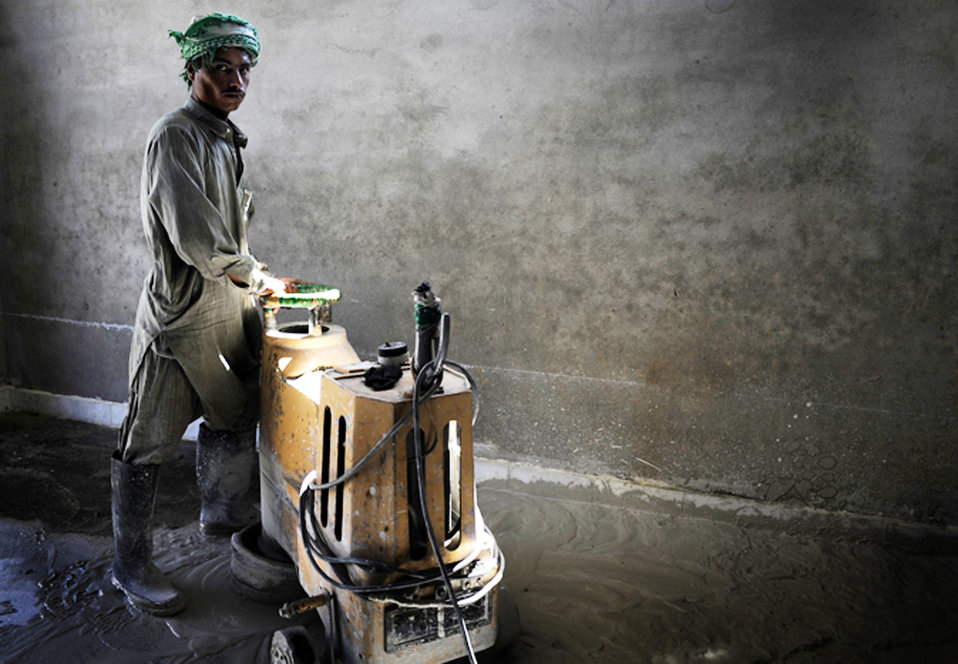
Afghanistan's future foundation

A local contractor spreads concrete for a development site May 30, Nangarhar Province Afghanistan. The development is monitored by the Provincial Reconstruction Team, Forward Operating Base Finley-Shields, Nangarhar. The PRT is responsible for development and reconstruction projects in Nangarhar Province. The projects are built by local and contractors and are designed to improve the livelihood of the people living in the area.